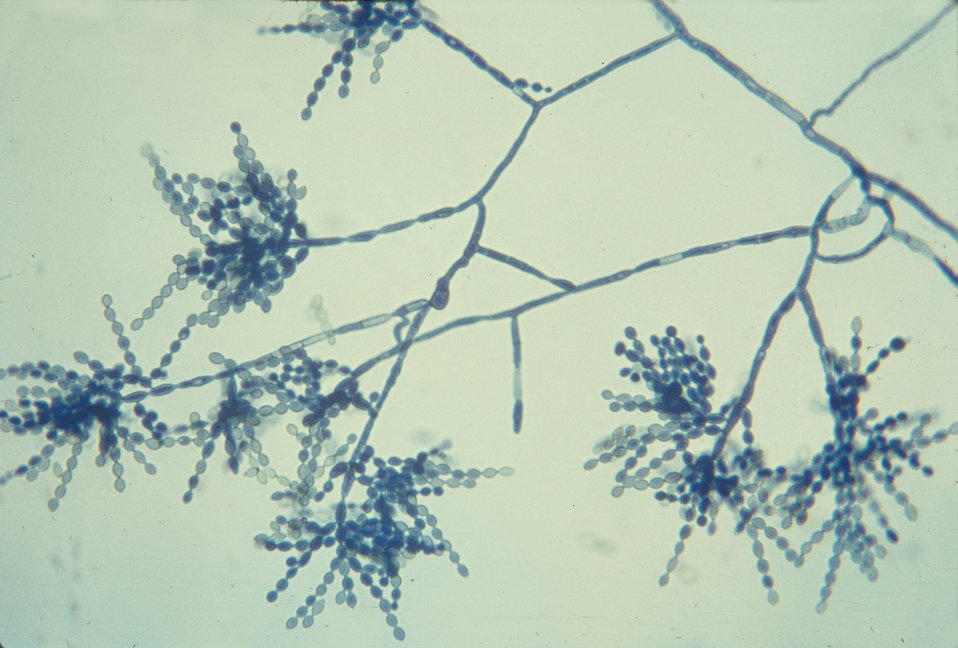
Shown is a photomicrograph of Cladophialophora carrionii, magnified 475X.